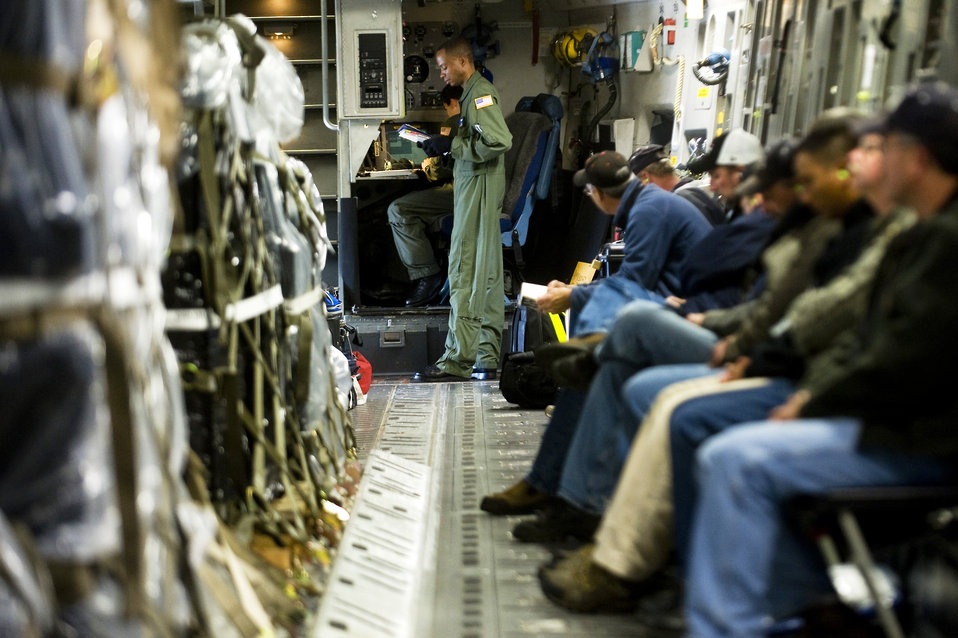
McChord Airmen fly response team to American Samoa

Tech. Sgt. Derrick Russell reviews a preflight checklist aboard a C-17 Globemaster III as Federal Emergency Management Agency representitives wait for takeoff Oct 1, 2009, at McChord Air Force Base, Wash. In the wake of a 7.6 magnitude undersea earthquake that caused a devastating tsunami to strike American Samoa, McChord AFB Airmen deployed a U.S.-based FEMA team to the region. Sergeant Russell is a 7th Airlift Squadron loadmaster.